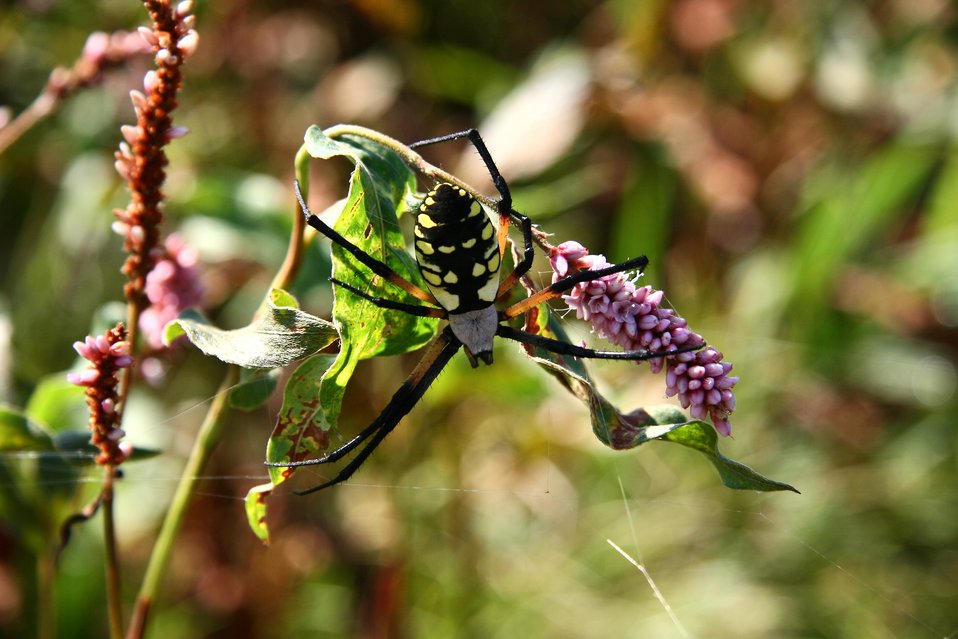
Black and Yellow Garden Spider

A garden spider (Argiope aurantia) patiently waits above a web atop a smartweed plant in a wetland.

Taken: August 2011 at Gleason WPA, NE.

Credit: Jeff Drahota / USFWS

Photo Contest Entry #173